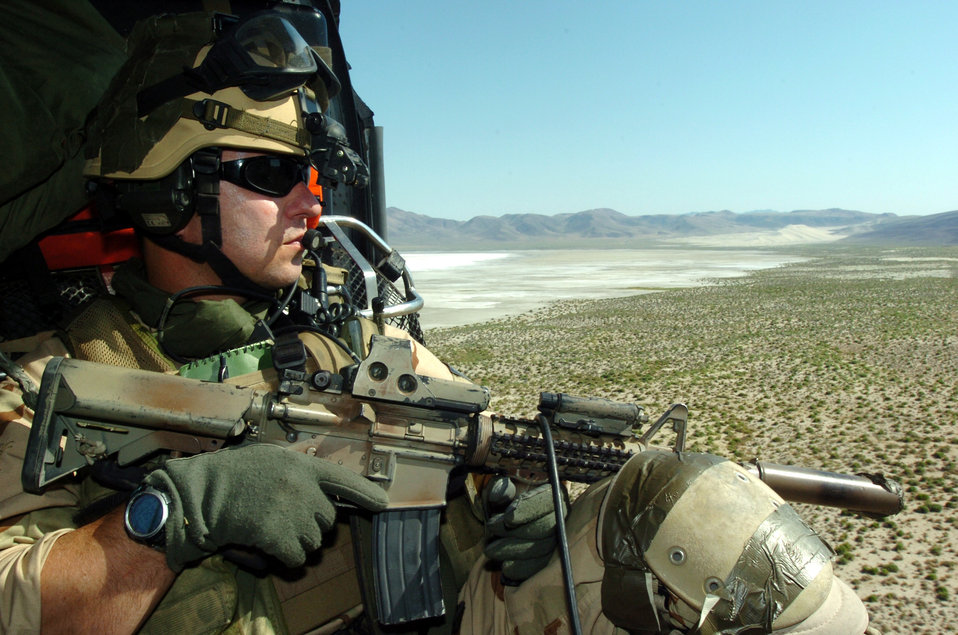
Desert rescue

FALLON, Nev. -- Master Sgt. Greg Plasun prepares to participate in Desert Rescue. Desert Rescue is a multi-service, multi-national training exercise held annually to prepare combat search and rescue teams to extract personnel in a variety of environments and situations. Sergeant Plasun is from the 58th Rescue Squadron.